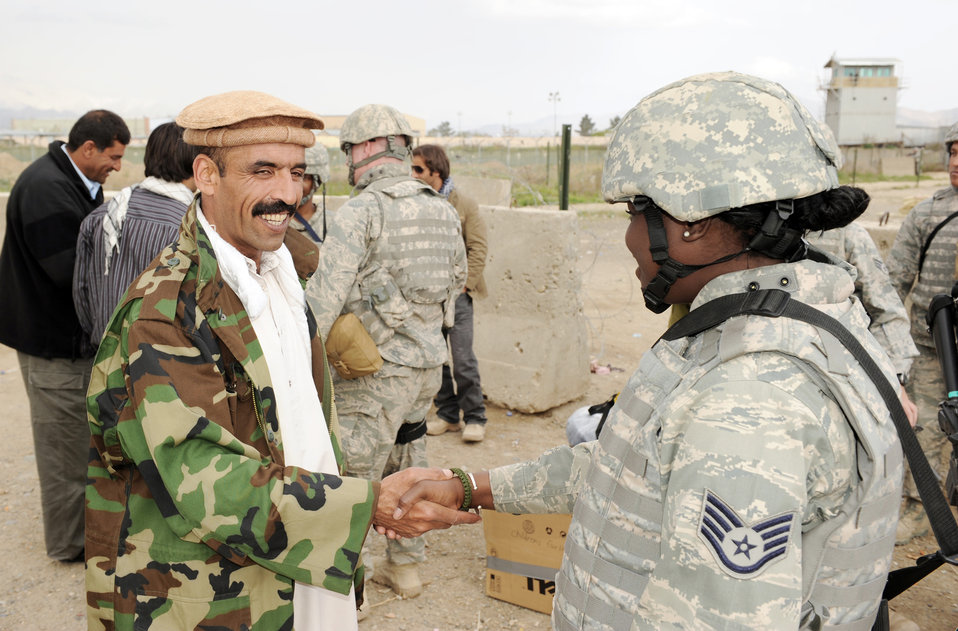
Operation Care

A village resident greets Staff Sgt. Ndeye Silla during an Operation Care humanitarian aid mission April 5, 2010, outside of Bagram Airfield, Afghanistan. Sergeant Silla is from the 577th Expeditionary Prime BEEF Squadron.